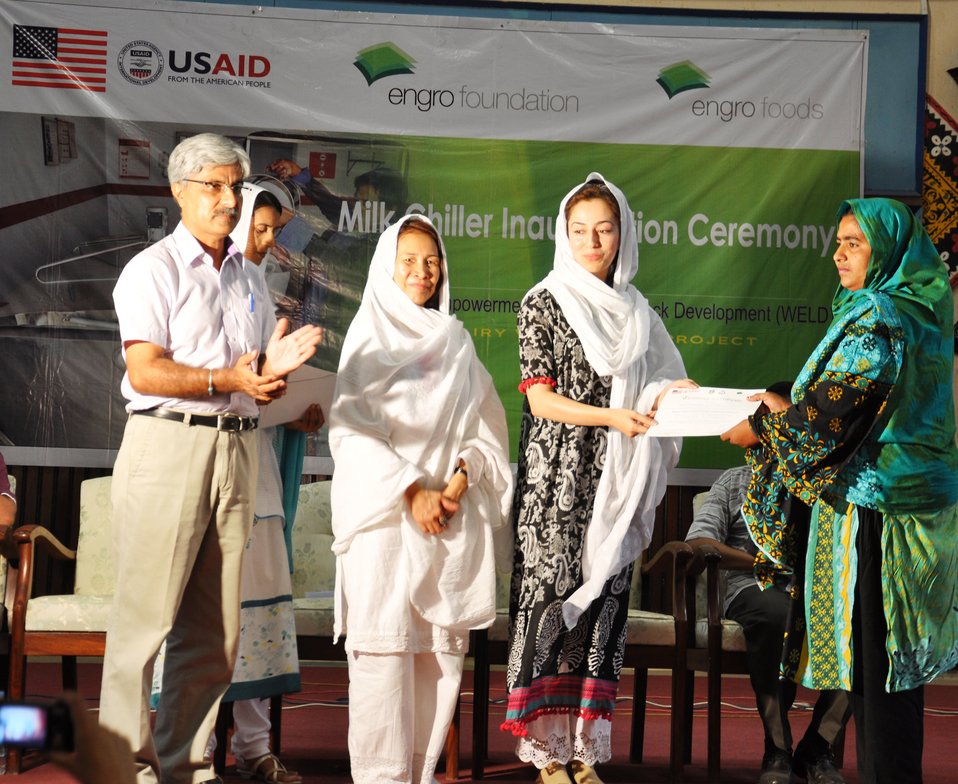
USAID, Engro to install Milk Chillers in Sindh, Punjab

Ms. Maryam Riaz, USAID awarded certificates to qualified Female Livestock Extension Workers (FLEW) under WELD project by USAID and Engro Foundation in a ceremony